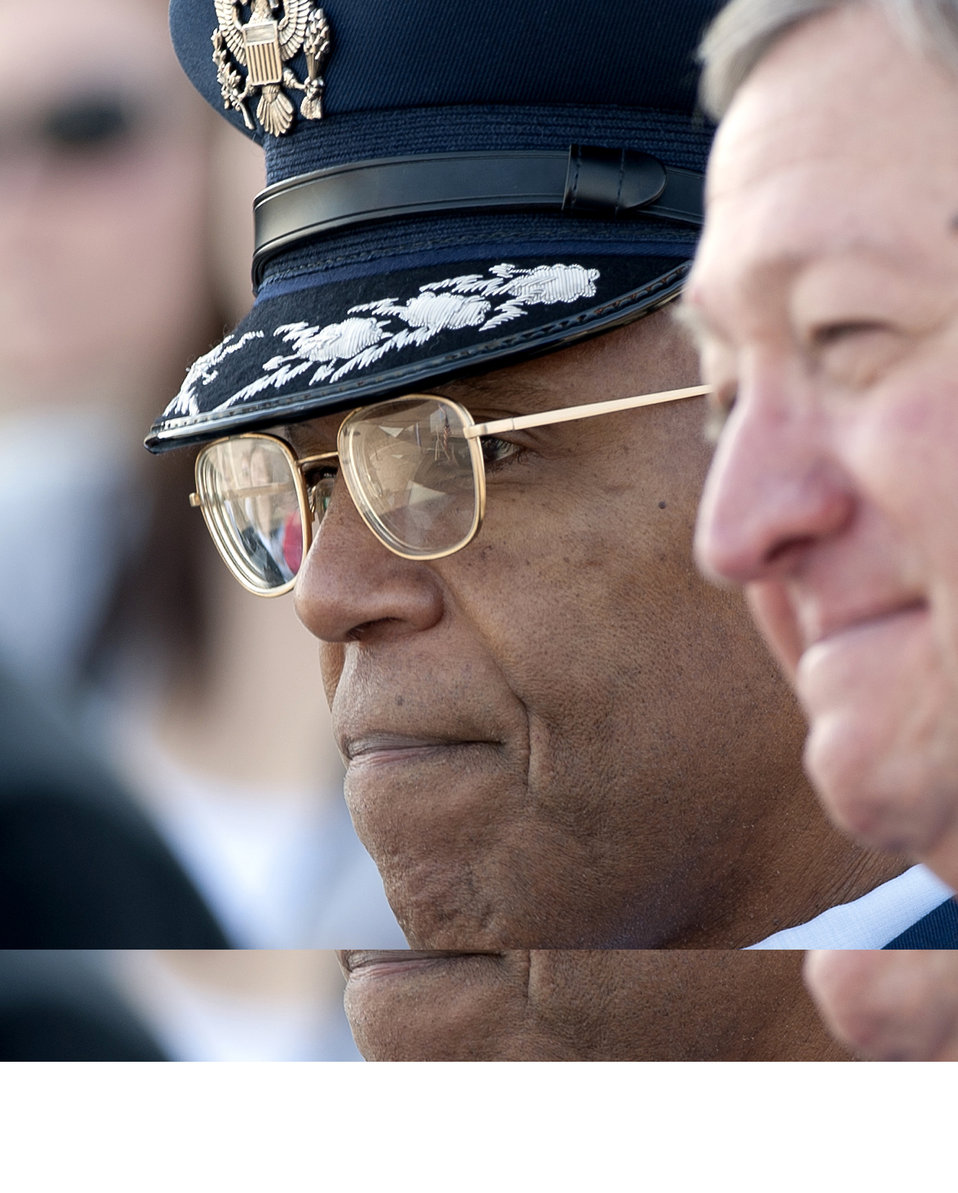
Veterans Day

Air Force Vice Chief of Staff Gen. Larry Spencer attends a wreath laying ceremony in observance of Veterans Day on Nov. 11, 2012, at the Air Force Memorial in Arlington, Va.